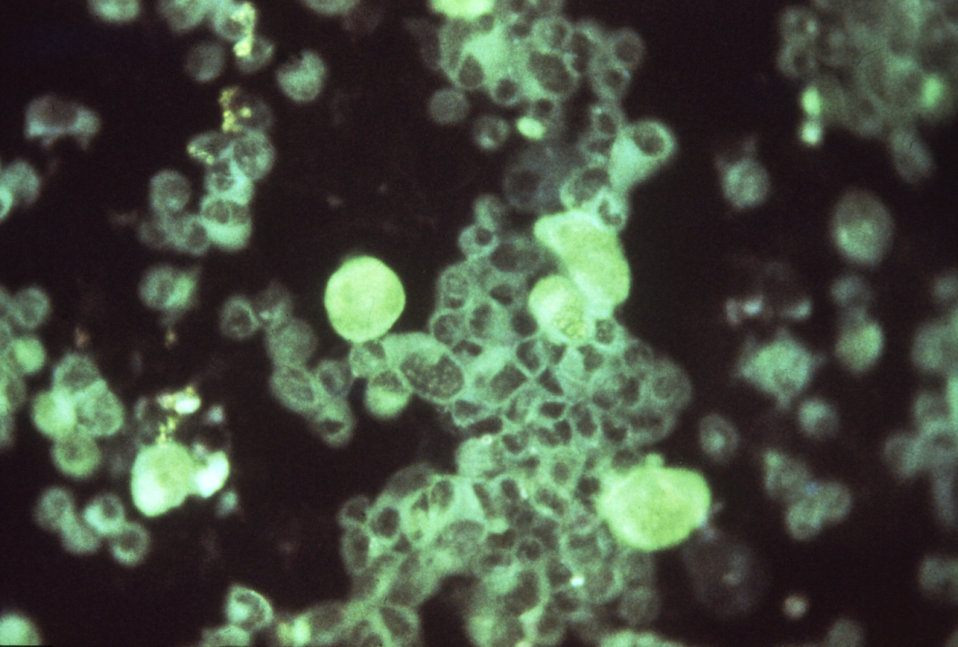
Here, using immunofluorescent technique, a specimen of human embryonic lung reveals the presence of cytomegalovirus; Mag. 25X.